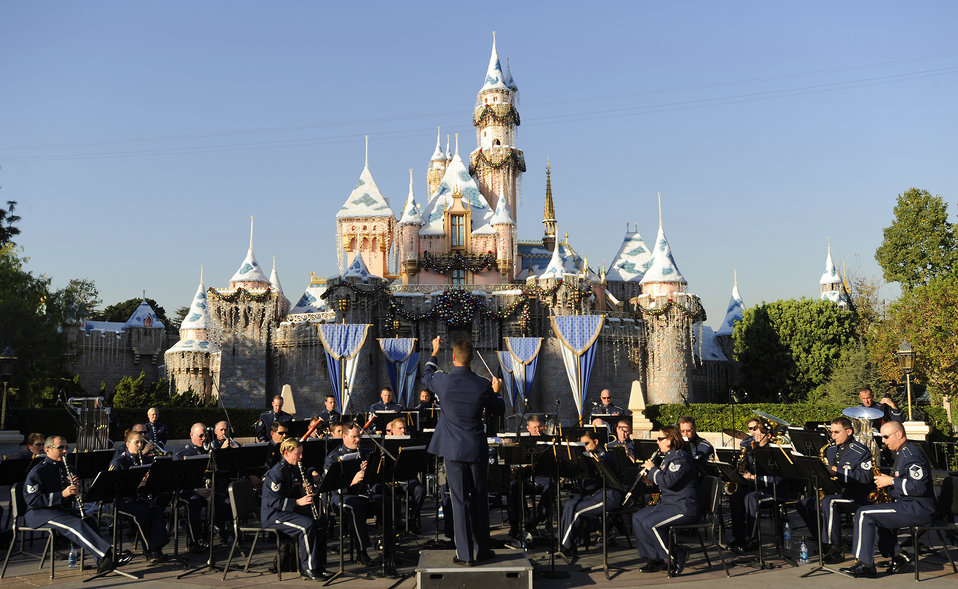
Air Force Week Los Angeles

The U.S. Air Force Band of the Golden West performs for hundreds of spectators in front of Sleeping Beauty's Castle at the Disneyland Resort in Anaheim, Calif., Nov. 17. The band is performing during Air Force Week Los Angeles, an event designed to educate the local population about the Air Force's capabilities and missions through various activities and exhibitions in the Los Angeles area.